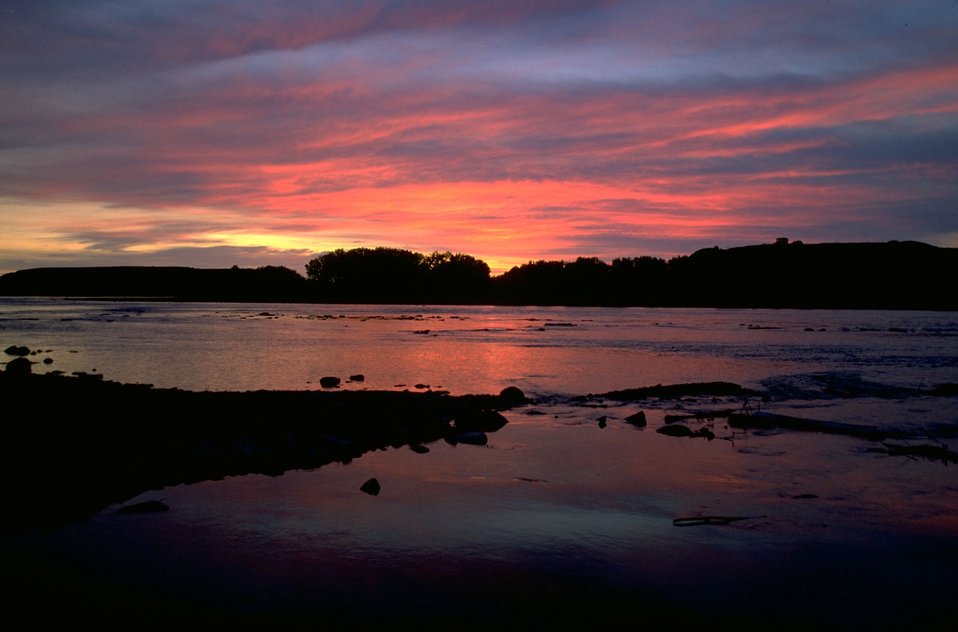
Beautiful sunset on the Yellowstone River